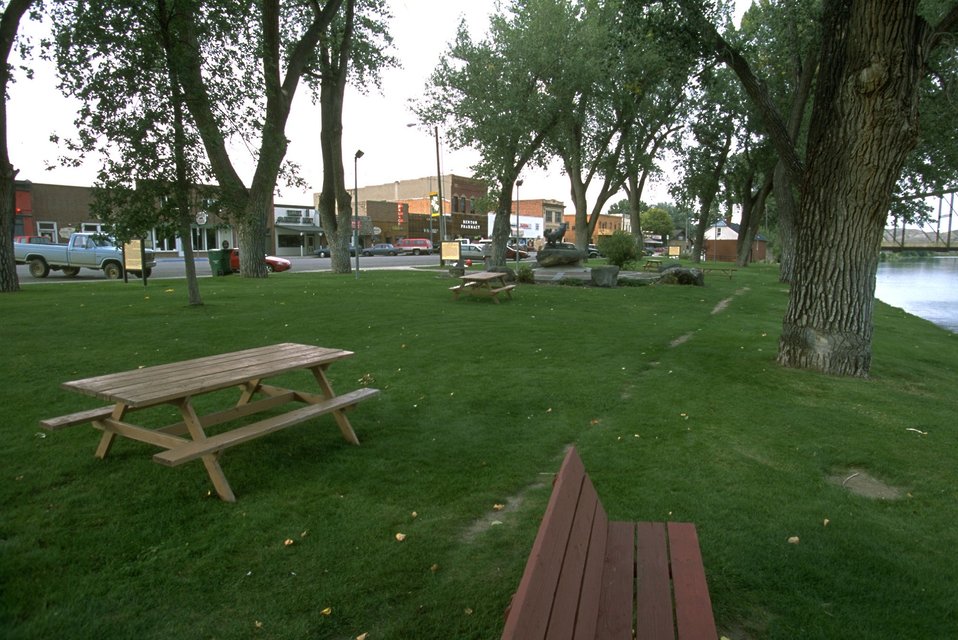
Levee at Fort Benton